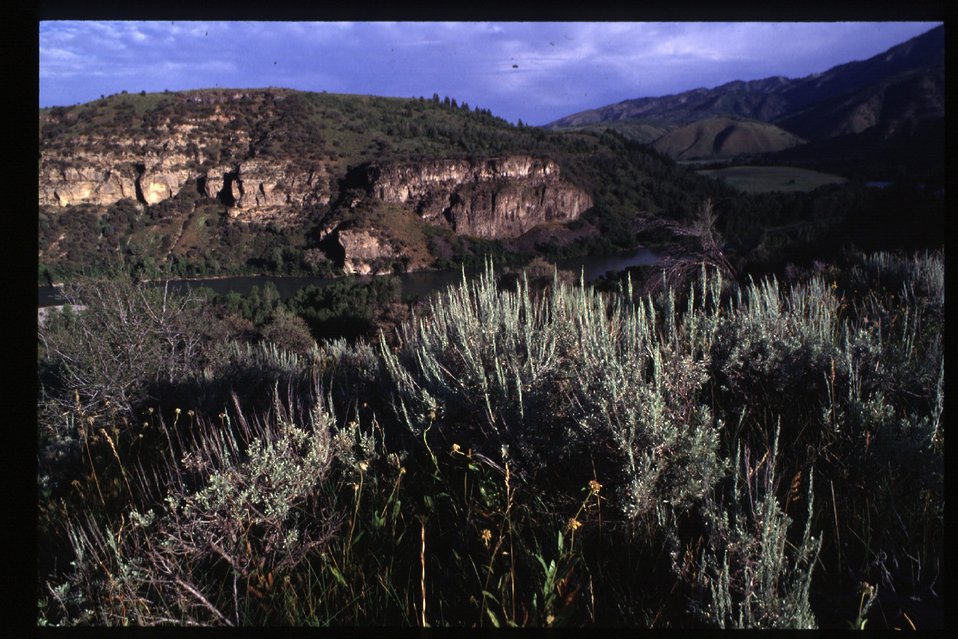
Scenic vista South Snake River USRD Upper Snake River District